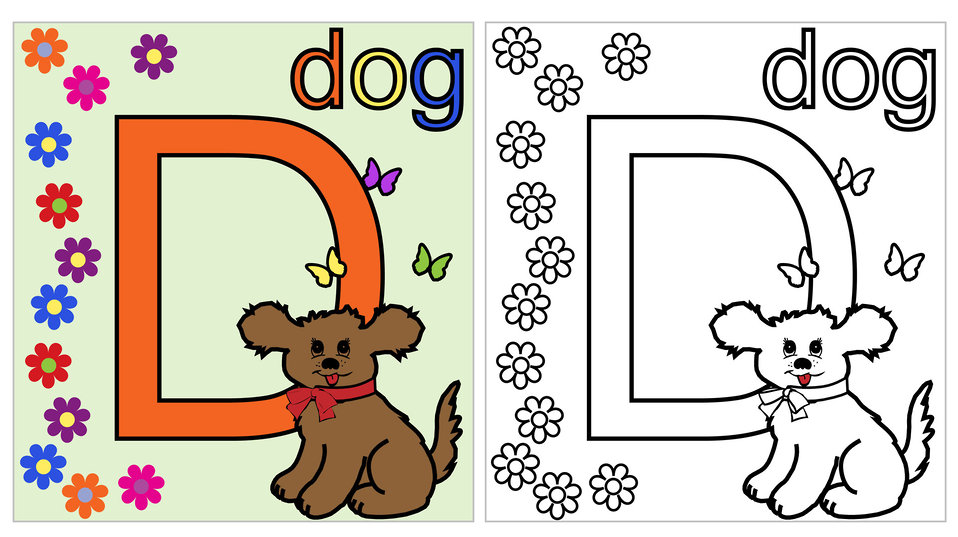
Dog coloring page d

Cute puppy dog letter d coloring page.